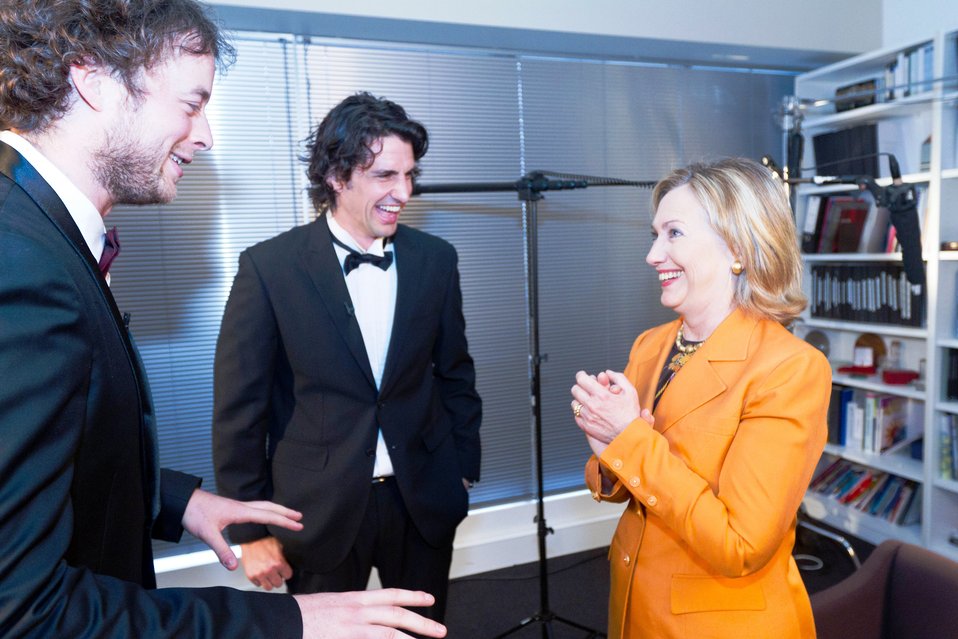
Secretary Clinton Jokes With Andy and Hamish

U.S. Secretary of State Hillary Rodham jokes with Hamish Blake, left, and Andy Lee, center, in Melbourne, Australia, on November 7, 2010.